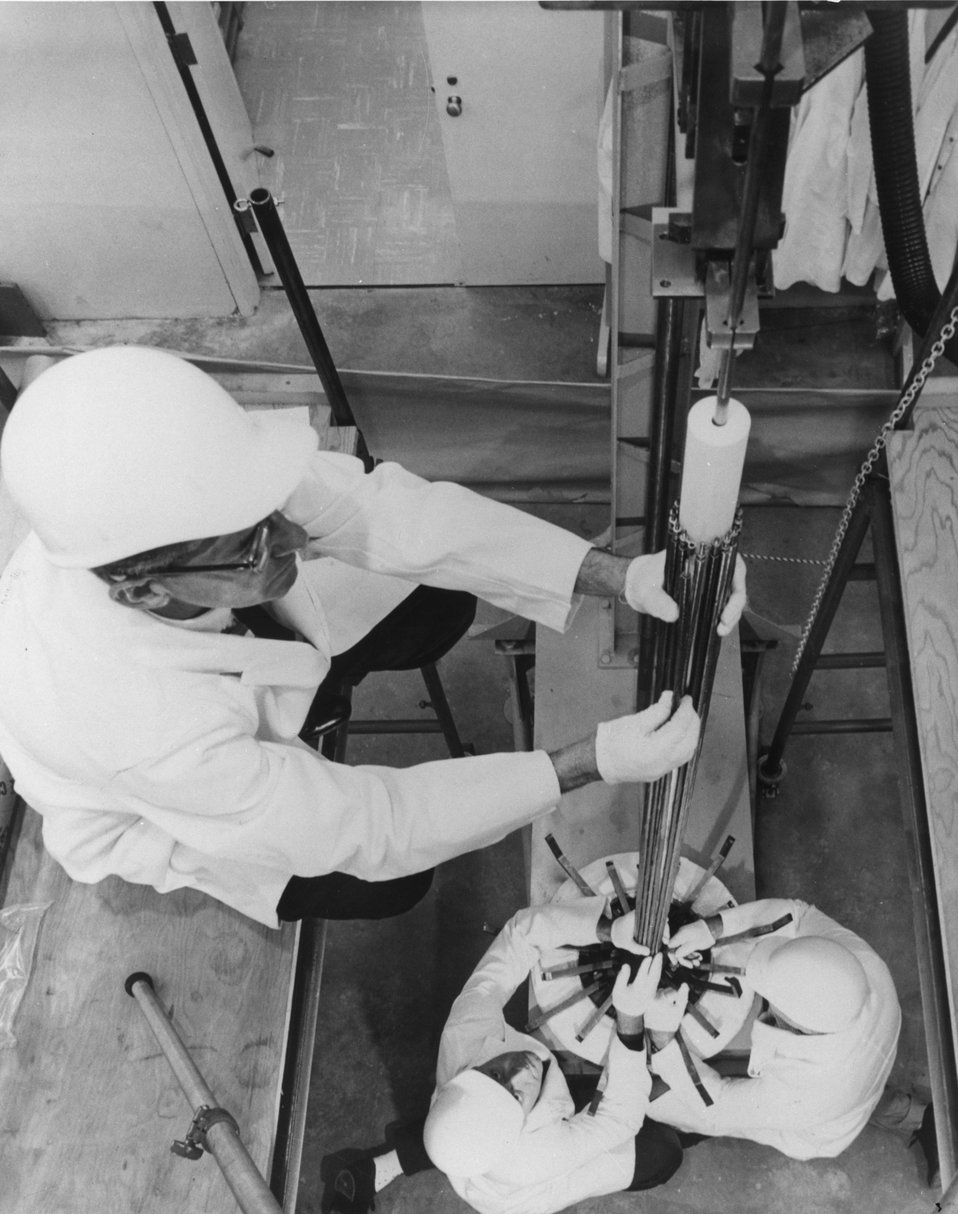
A fuel element for the Experimental Beryllium Oxide Reactor is assembled at General Atomic Division of General Dynamics in San Diego. c. 1964